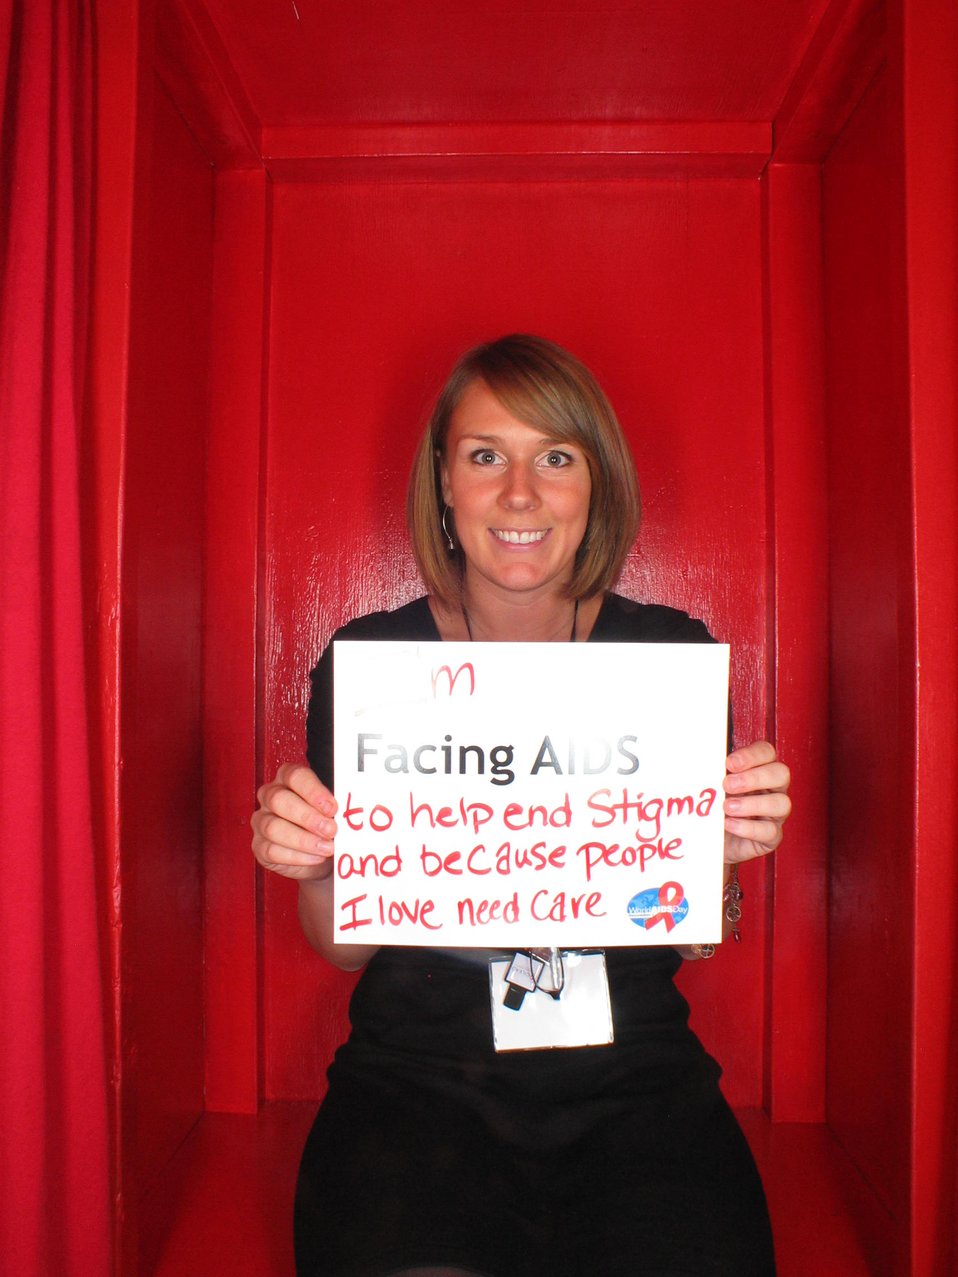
I'm Facing AIDS to help end stigma because people I love need care.